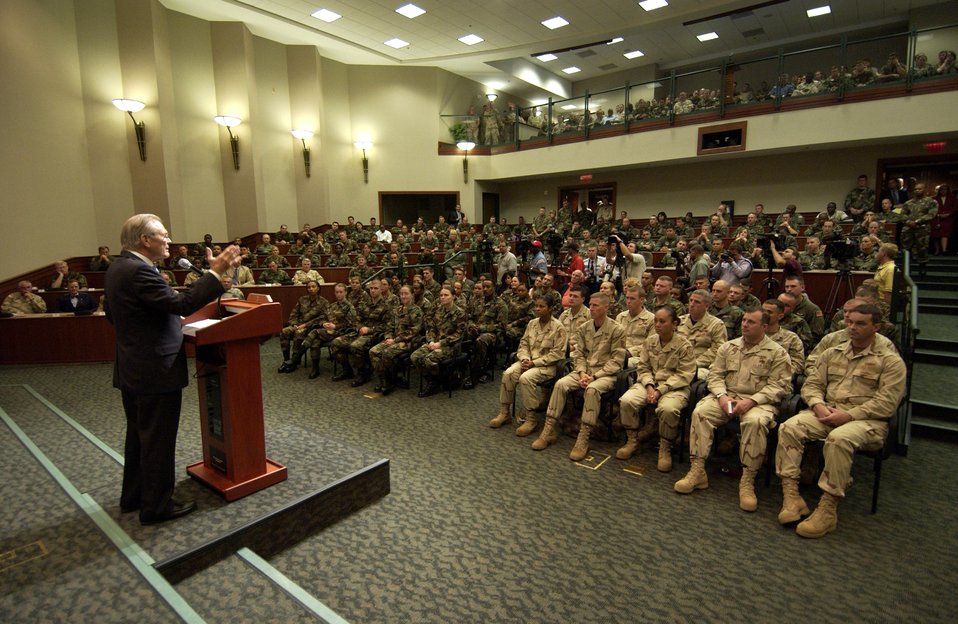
SECDEF visit

MACDILL AIR FORCE BASE, Fla. -- Secretary of Defense Donald H. Rumsfeld answers a question during a town hall meeting in the Davis Conference Center here. The secretary was at the base Oct. 11 to visit servicemembers and the staff at U.S. Central Command and U.S. Special Operations Command.